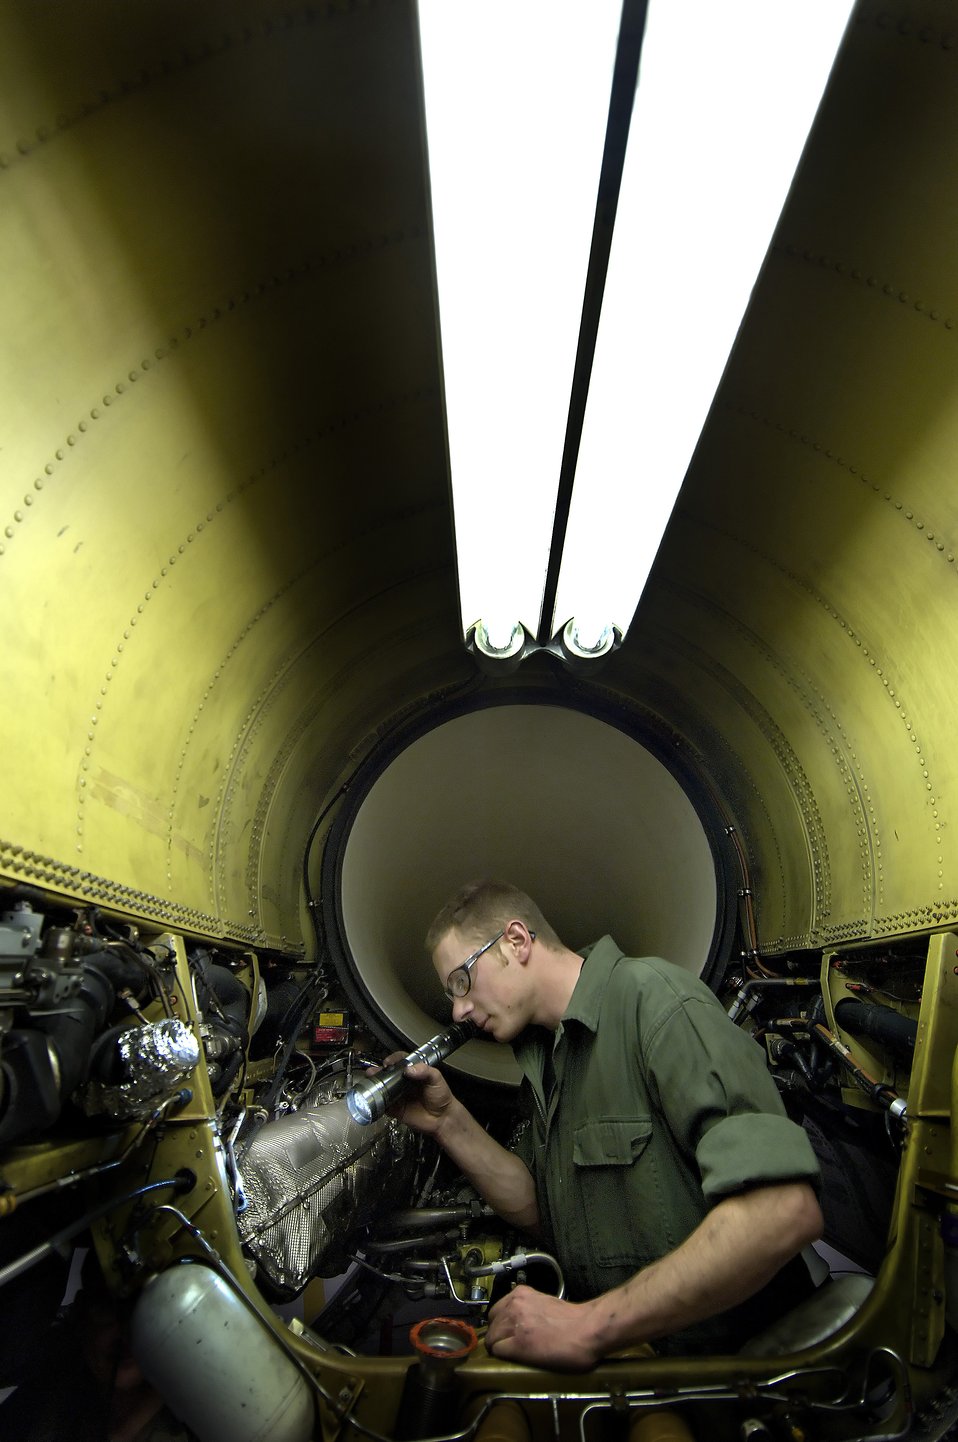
Engine bay

SOUTH BURLINGTON, Vt. (AFPN) -- Staff Sgt. Dave Custer inspects his F16 Fighting Falcon engine bay before the aircraft deploys. He is a crew chief with the Vermont Air National Guard.